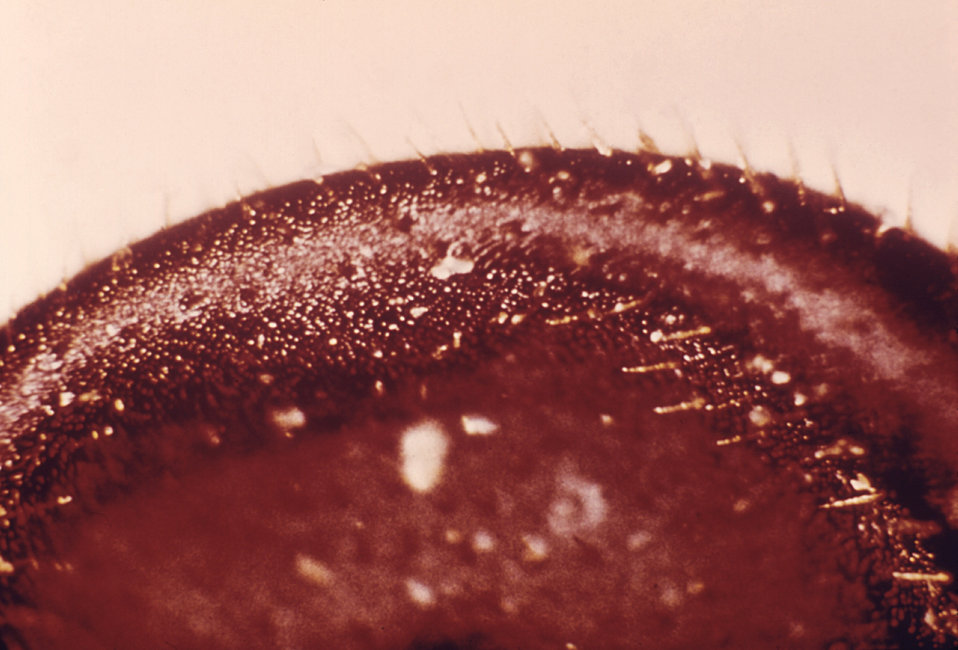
This is a nymph-staged North American soft tick from the genus Otobius with its spiny integument.